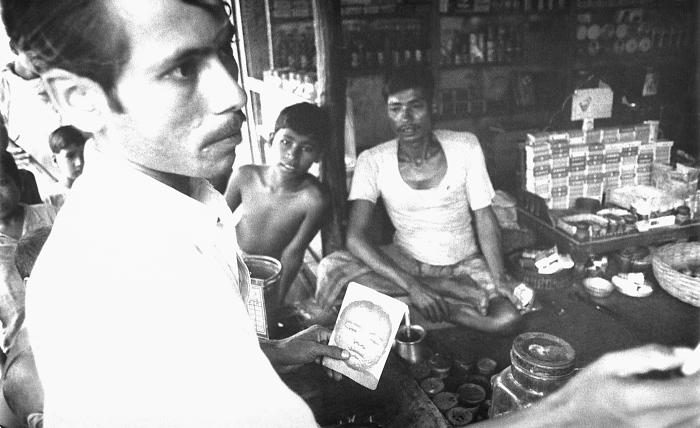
This local volunteer smallpox eradication team member was photographed as he went about his task of searching through a Bangladesh shop, asking the proprietor and patrons if they knew of any smallpox cases. In 1968, the WHO, and other world public health organizations - led by the United States and the then-Soviet Union - came together to join in the fight to eradicate smallpox from the world. The worldwide eradication of this dreaded virus was due to this Smallpox Eradication Campaign, whereupon, a mass-vaccination program was instituted across the globe that lead to the declaration in 1978 by a global commission that smallpox had been eradicated, which was officially accepted by the 33rd World Health Assembly in 1980. Smallpox is a serious, contagious, and sometimes fatal infectious disease.